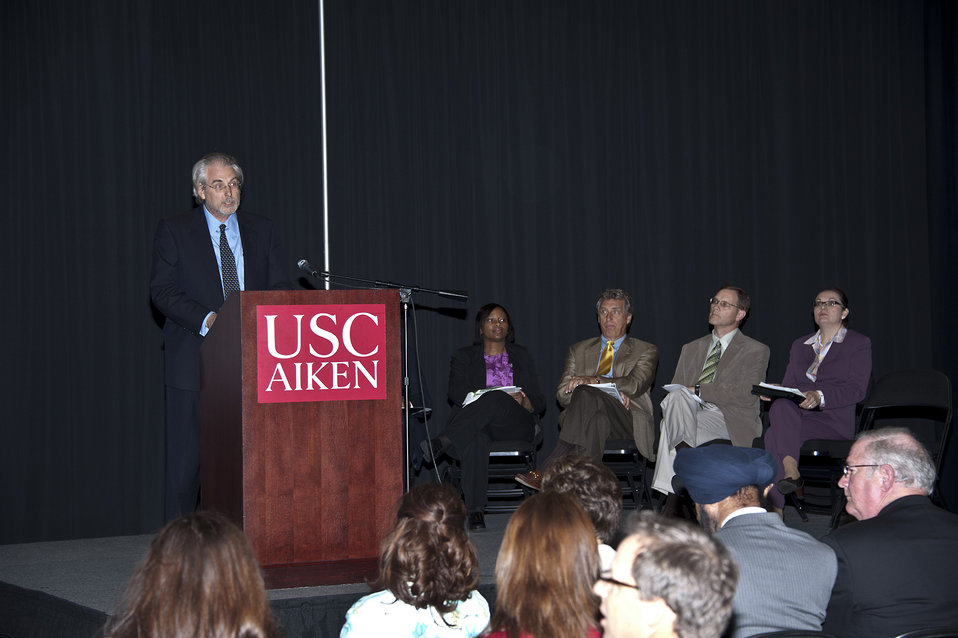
SRS Economic Impact Study

Dr. David Harrison, interim dean of the USC Aiken School of Business Administration, discusses an economic impact study at the USC Aiken Convocation Center. In the background are meeting presenters, left to right, EM Chief Operations Officer Cynthia Anderson, SRNS President and CEO Garry Flowers, and Savannah River Remediation Recovery Act Program Manager Mark Schmitz.